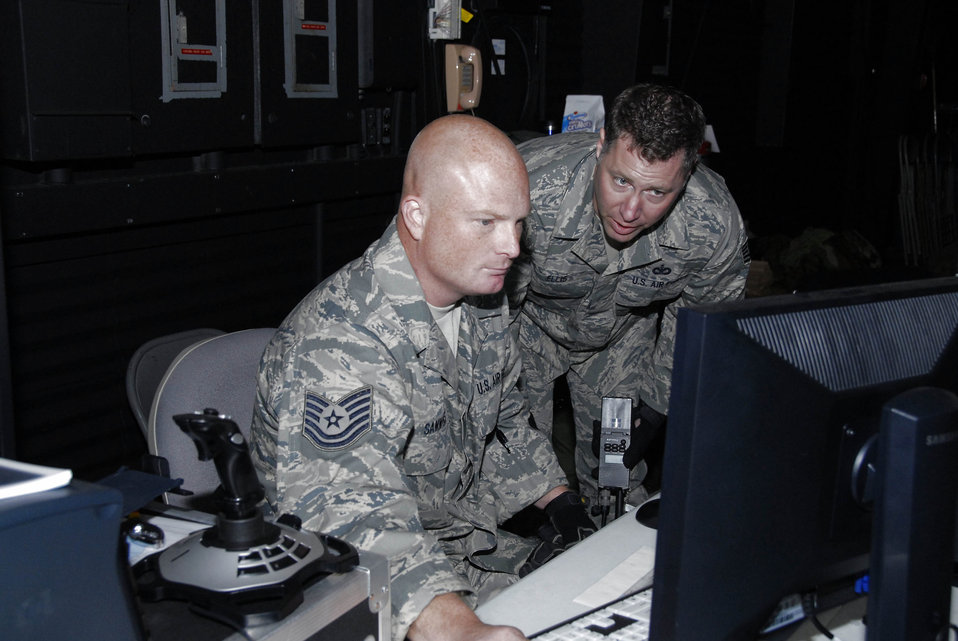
Virtual training for real-world missions

Tech. Sergeants Jody Sammons and Jay Ellis manage a computer-generated scenario that is based on their real-world convoy experiences in Iraq in October at Volk Field, Wis.